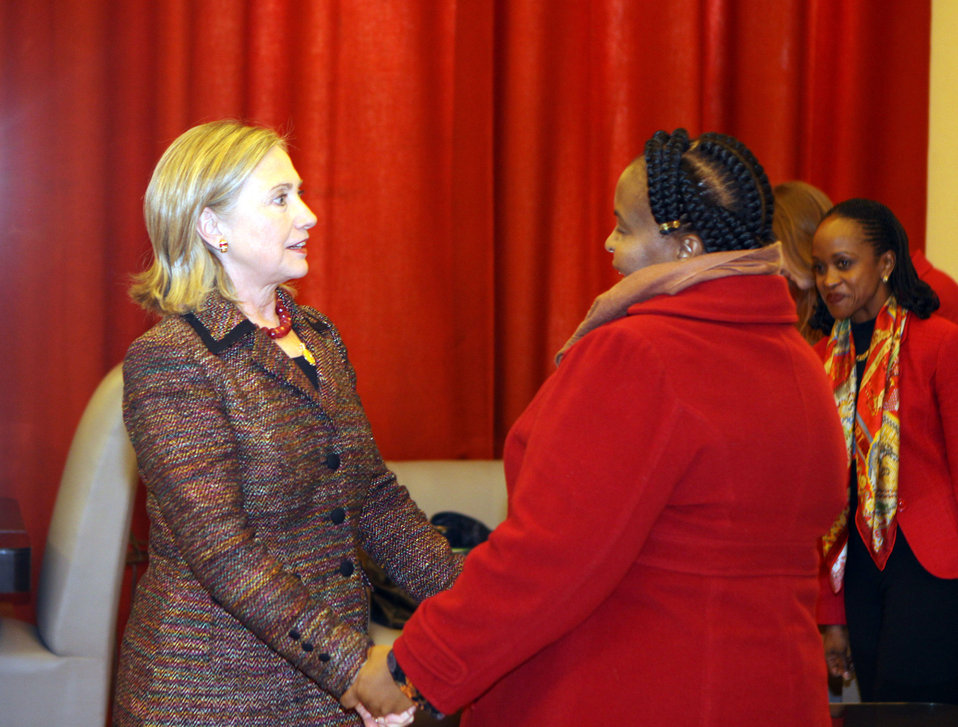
SouthAfrica-Bilat-1Secretary Clinton Shakes Hands With South African Foreign Minister Nkoane-Mashabane

U.S. Secretary of State Hillary Rodham Clinton shakes hands with South African Foreign Minister Maite Nkoane-Mashabane at the United Nations Office at Geneva, Switzerland, on February 28, 2011.